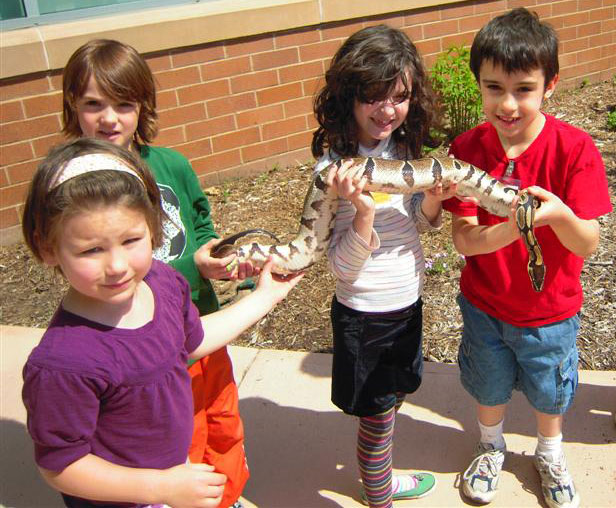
Photo of the Week - Take Your Child to Work Day

Photo of the Week - 05/26/10

The Northeast Region's Take Your Child to Work Day was on April 22, 2010 (Earth Day!). Children planted flowers in the pollinator garden, learned about birdwatching and made bird feeders.

Credit: Bill Butcher/USFWS

Connecting children with nature is important year-round! For information on how you can connect your child with the natural world, check out our website: www.fws.gov/letsgooutside/